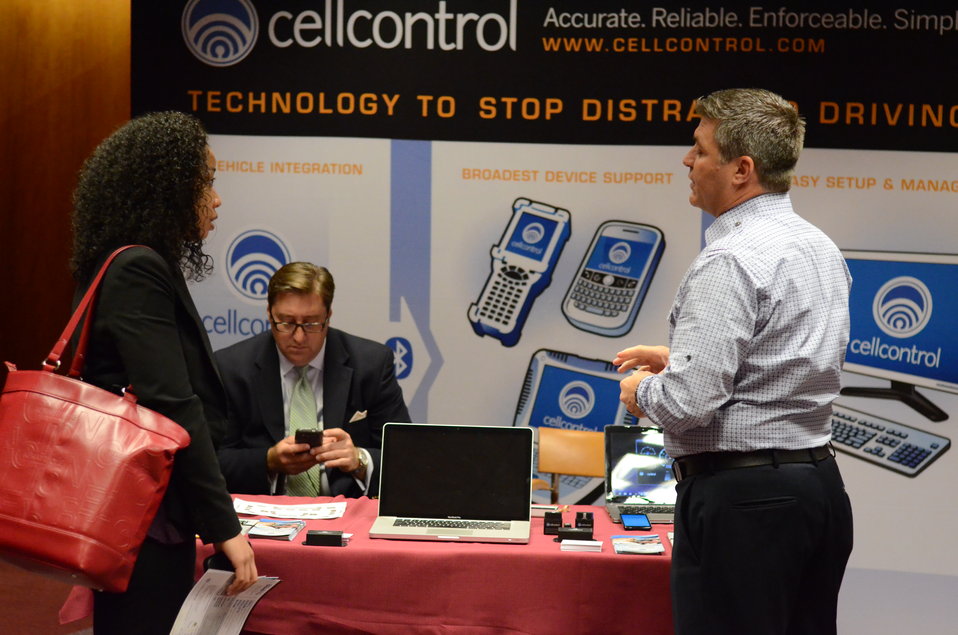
Distracted Driving Technology Showcase April 19, 2013